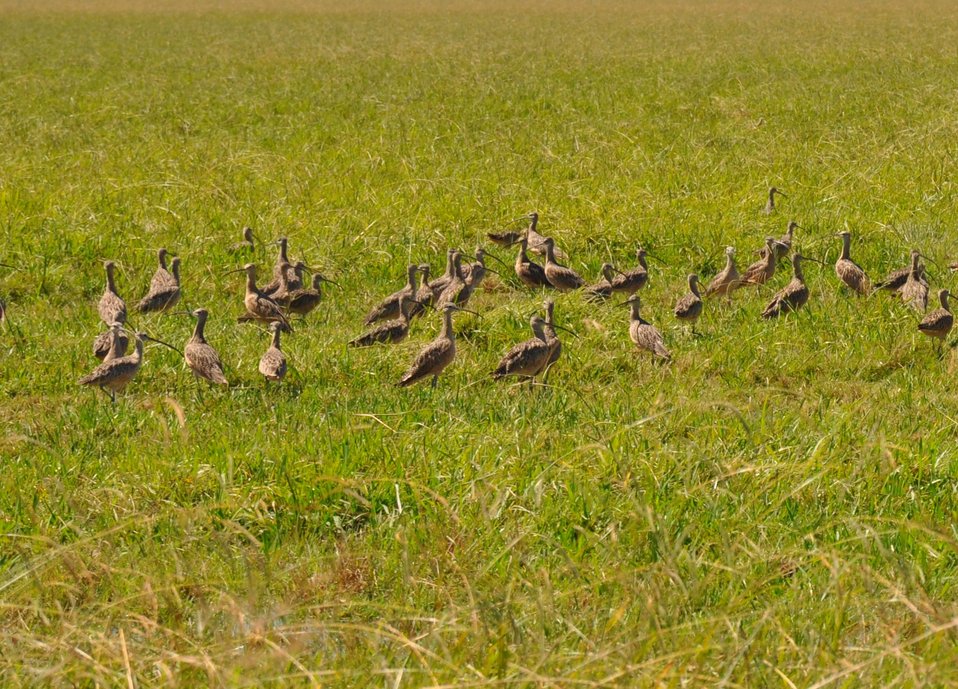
long billed curlews

Davis, CA